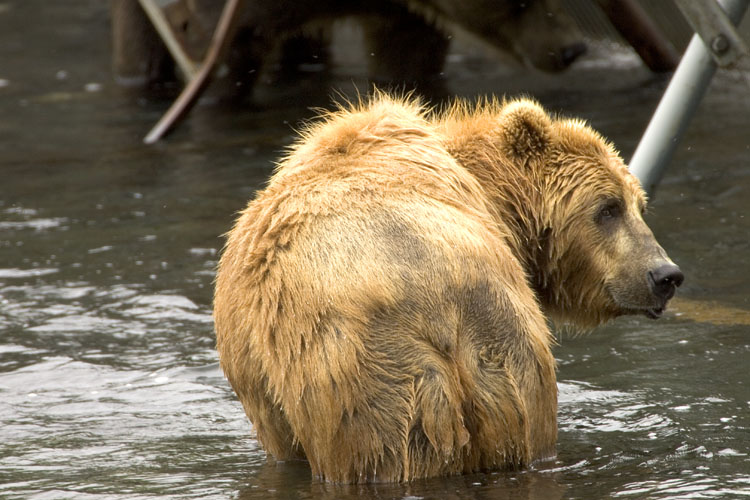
KOD Hildebrand (36)

Kodiak National Wildlife Refuge- Wildlife